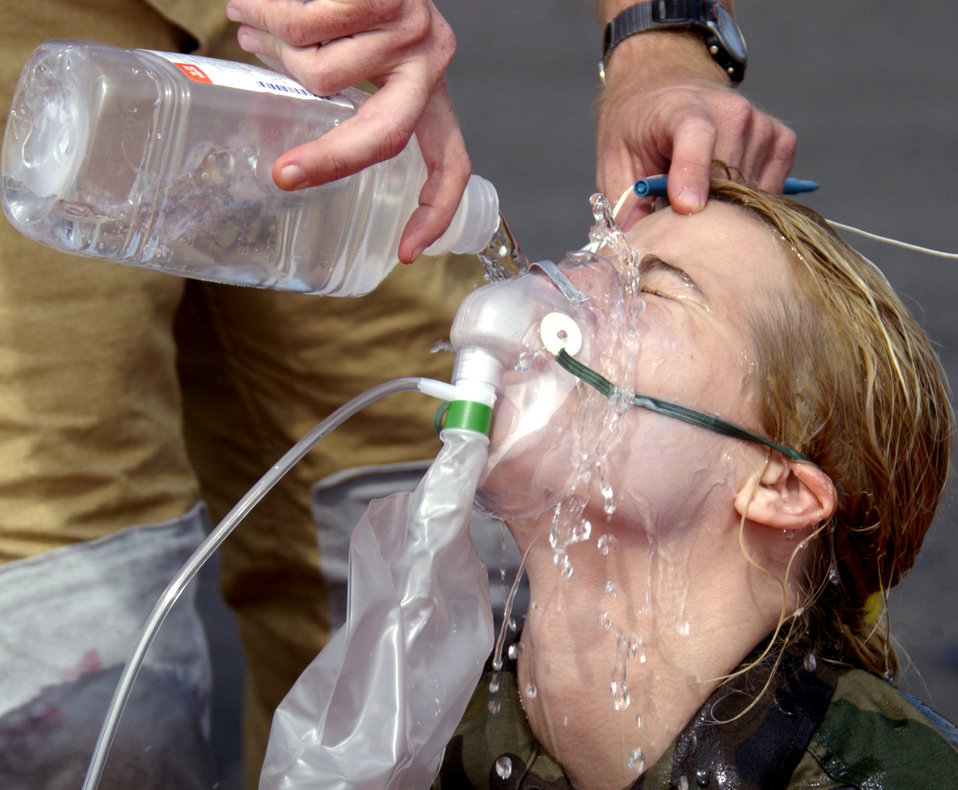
Gallant efforts

WASHINGTON -- An emergency medical technician flushes out the eyes of a volunteer victim in a triage area set up in the Pentagon's south parking lot during exercise Gallant Fox on July 24. Gallant Fox is a large-scale chemical, biological, radiological and nuclear-training exercise conducted by the Pentagon Force Protection Agency. The exercise provides training in responding to real-world mass casualty scenarios by various local emergency fire, police, medical and hazardous-material response units.